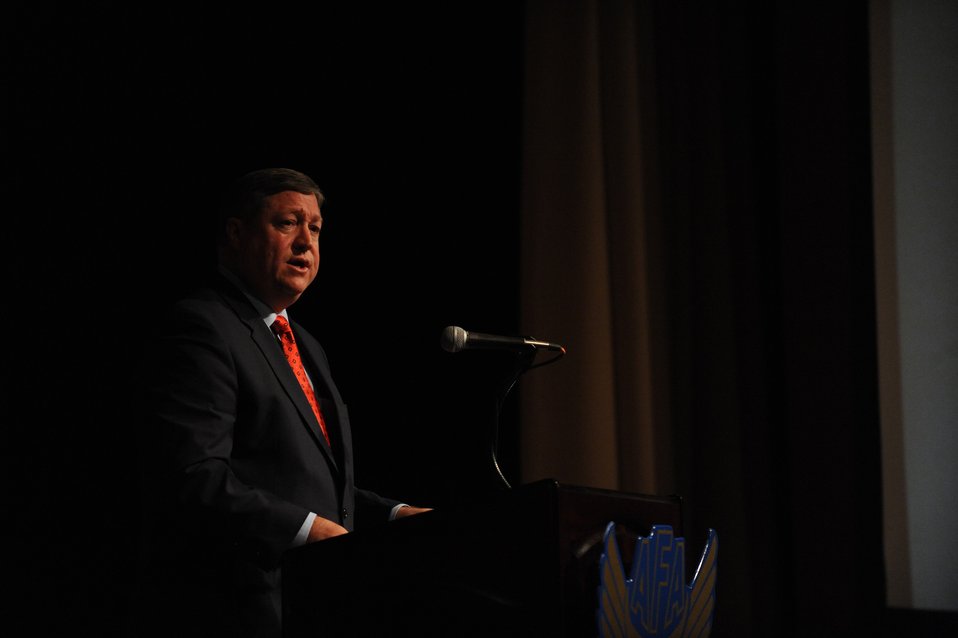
Secretary Donley speaks during Air Force Week Los Angeles

Air Force Secretary Michael B. Donley discusses the Air Force's top priorities and the way ahead for U. S. Space Command and the new Global Strike Command Nov. 21 during the Air Force Association's Global Warfare Symposium. The symposium was the culmination of Air Force Week Los Angeles, an event using various activities and exhibitions to educate the local community about the Air Force's capabilities and missions.